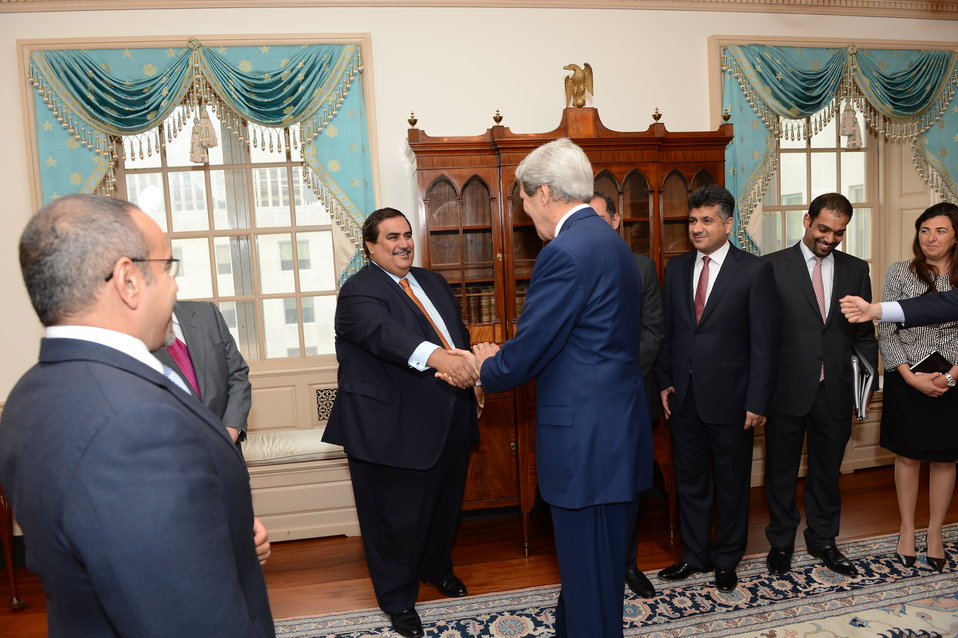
Secretary Kerry Shakes Hands With Bahraini Foreign Minister Sheikh Khalid bin Ahmed al-Khalifa

U.S. Secretary of State John Kerry shakes hands with Bahraini Foreign Minister Sheikh Khalid bin Ahmed al-Khalifa at the U.S. Department of State in Washington, D.C., on June 6, 2013.